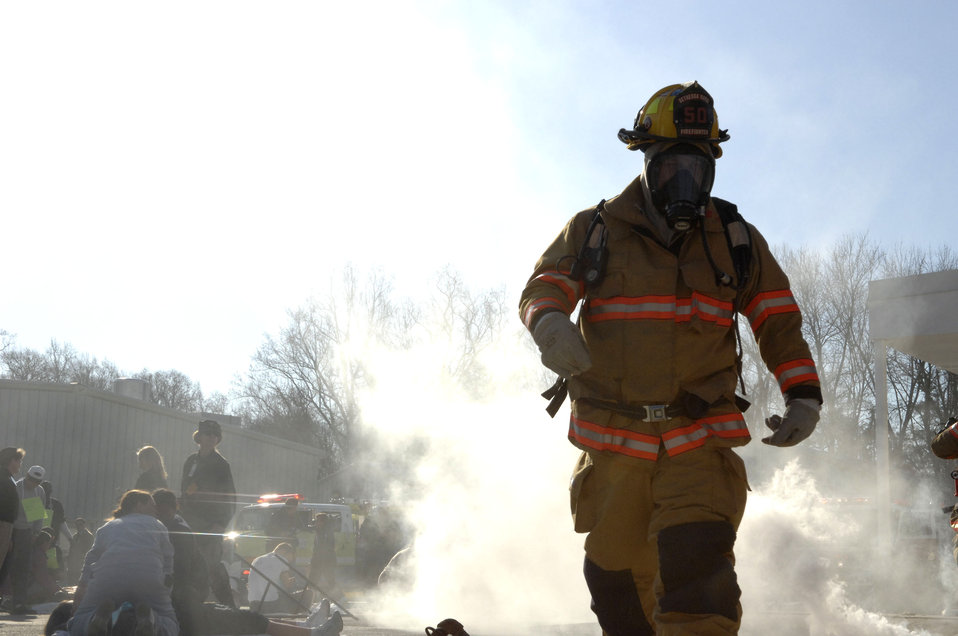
CMAX/Collaborative Multi-Agency Exercise

A fireman heads toward a